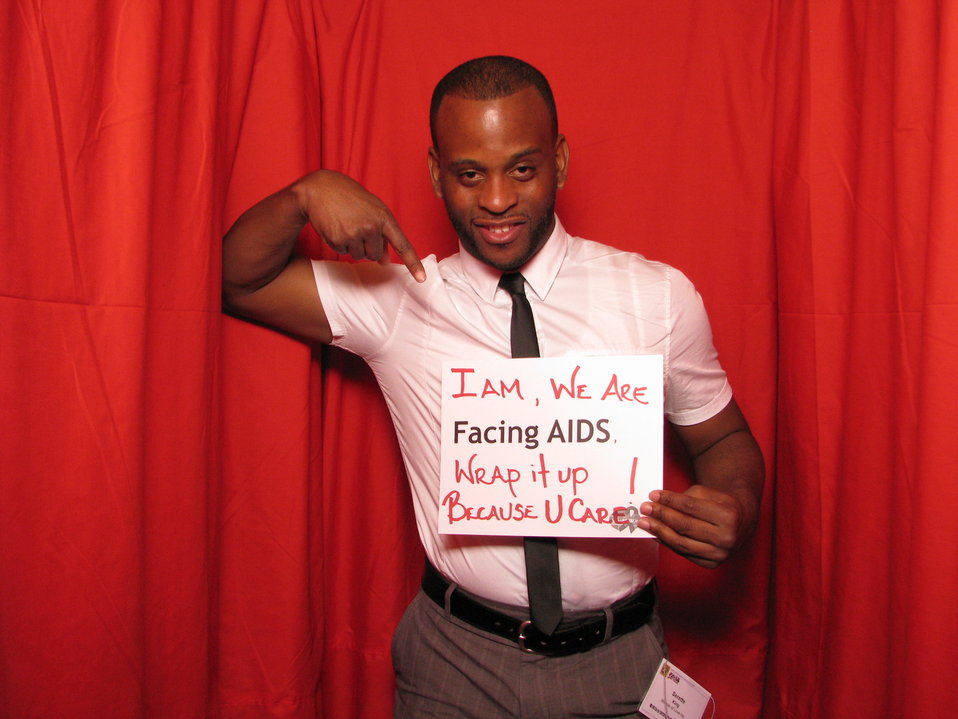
I AM, WE ARE FACING AIDS. Wrap it up because U CARE!

From the AIDS.gov photo booth at the U.S. Conference on AIDS, September 2010 (Orlando, FL).